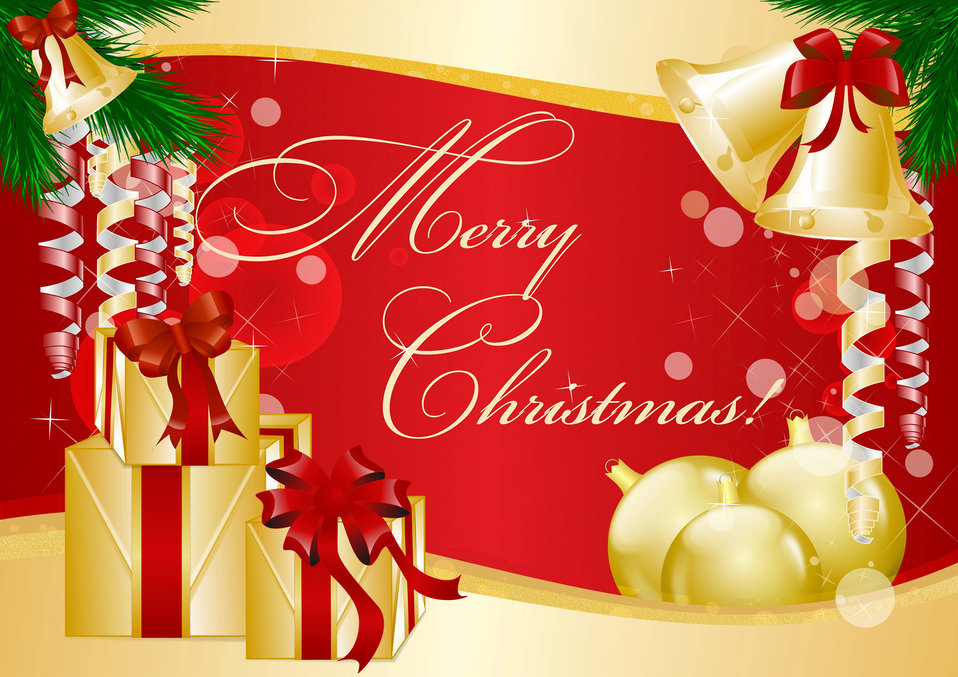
Merry christmas!

Vector christmas background. card with christmas..